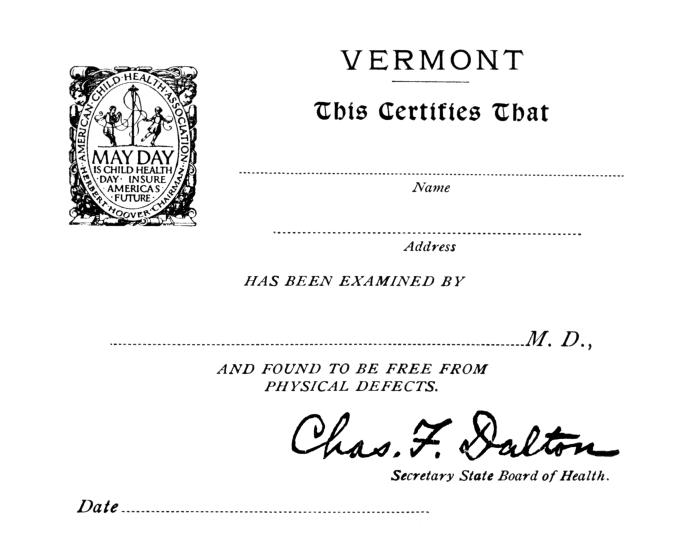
This historic image showed a document that was used to certify a patient's sound health. Issued by the state of Vermont, to be considered valid, it had to be signed by a physician. Note the provenance of the American Child Health Association, and its declaration of 'May Day', which is May 1st each year, as 'Child Health Day.' The original image was scanned from a glass lantern slide donated by the Minnesota Department of Health, and is one of a historical collection of documents and photographs devoted to observances of Child Health Day in the United States